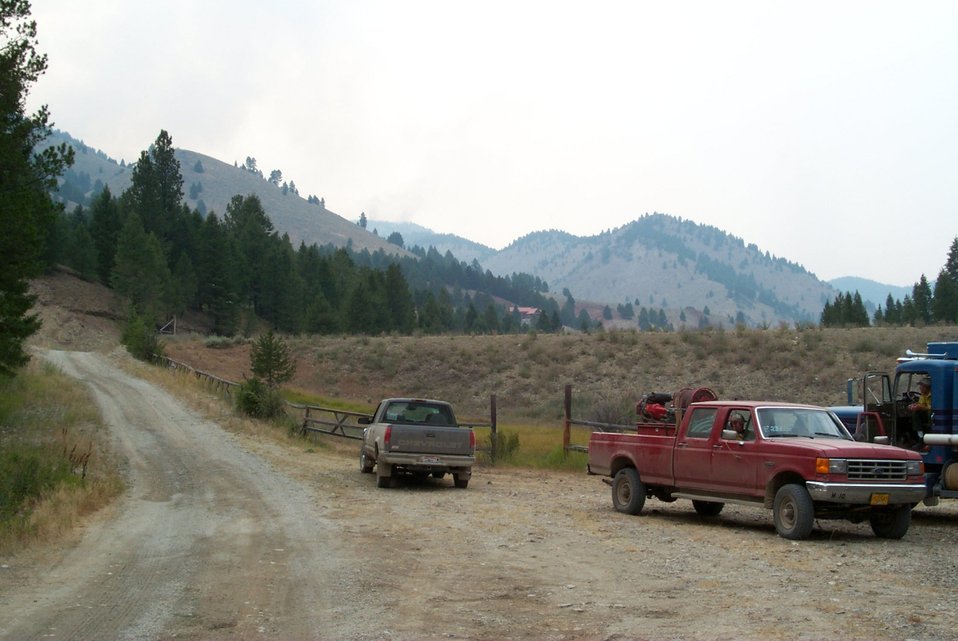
Fire Clearwater Fire Salmon Field Office USRD Upper Snake River District